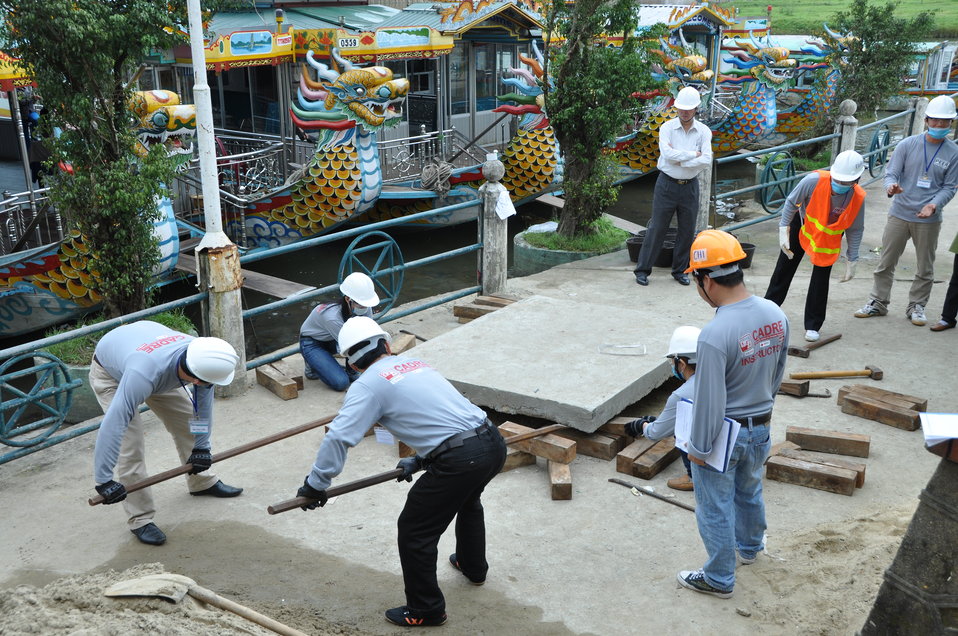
Disaster and Emergency Training Funded by USAID in Hue, Vietnam